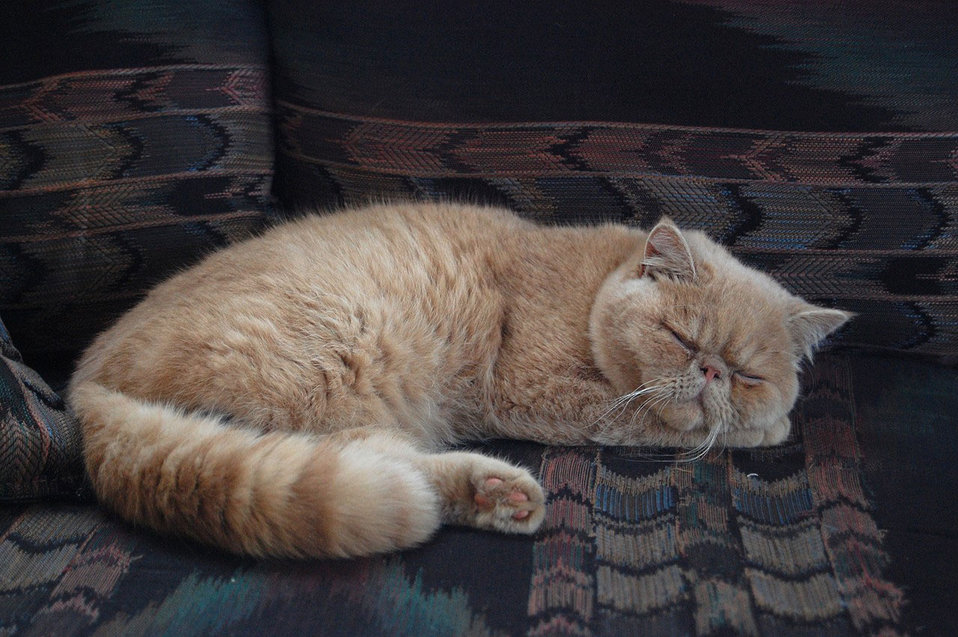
My persian cat sleeping

My exotic short-haired persian cat named rascal fast asleep..